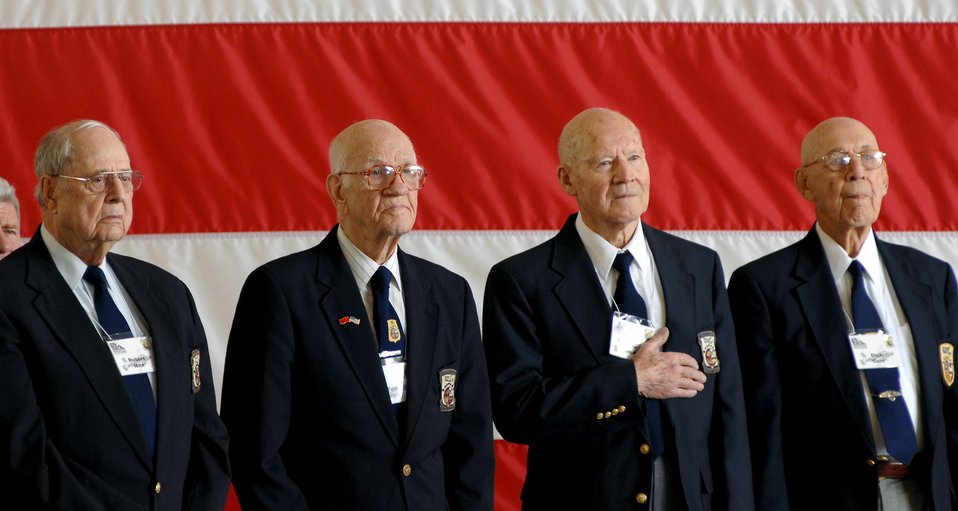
Doolittle Raiders 65th anniversary kicks off

(Left to right) Doolittle Raiders Robert Hite, Tom Griffin, Dave Thatcher and Dick Cole stand for the national anthem during a ceremony honoring the raiders and celebrating the 65th Anniversary of the raid April 17 at Randolph Air Force Base, Texas. The Doolittle Raiders flew B-25 Mitchell bombers over Japan April 18, 1942, just four months after Pearl Harbor.